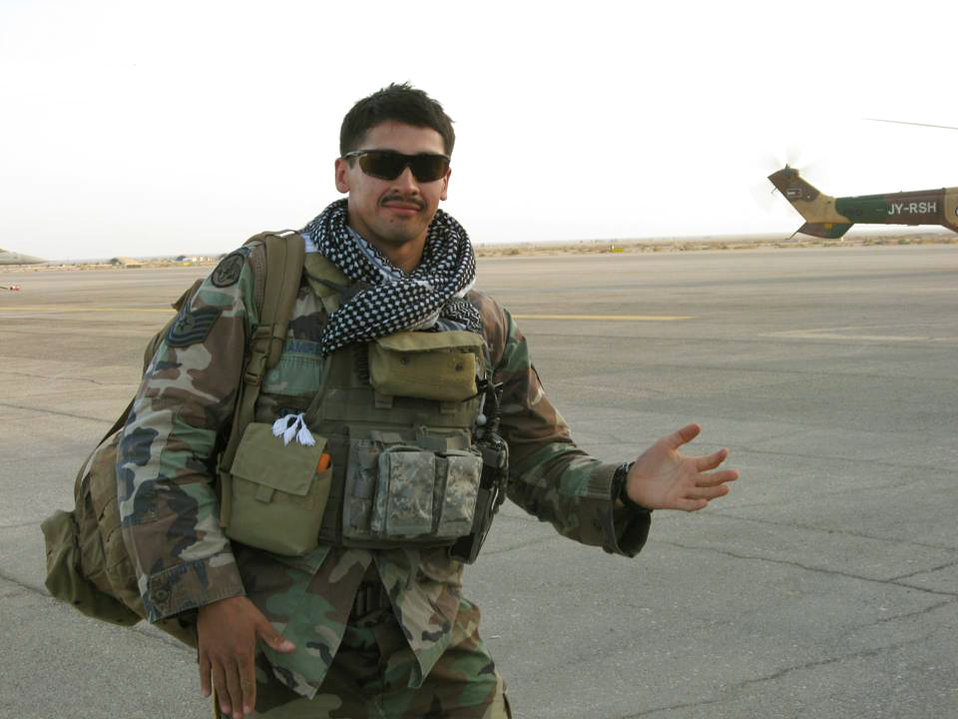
CPR PB

Just 24 hours after receiving CPR recertification, Staff Sgt. Eddie Ramirez, a battalion air liaison officer with the 13th Air Support Operations Squadron at Fort Carson, Colo., recently performed CPR and used an AED to save the life of a 79-year-old man who went into cardiac arrest while at a Colorado Springs fitness center.